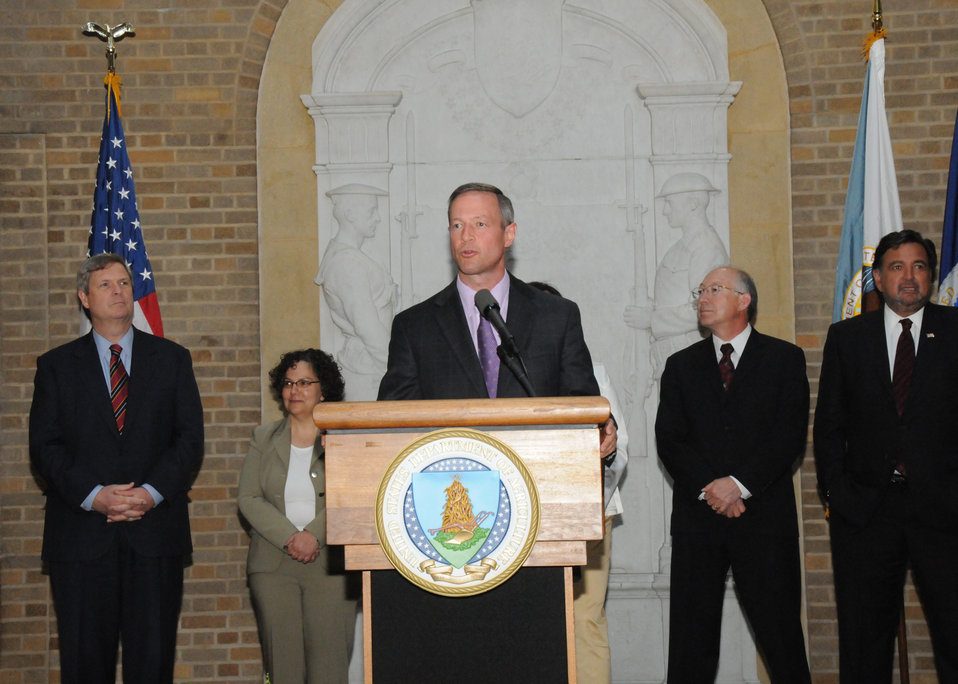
Maryland Governor Martin O’Malley makes remarks at the White House Conference on America’s Great Outdoors reception held at the Department of Agriculture on Thursday, April 15, 2010. (L to R in background Agriculture Secretary Tom Vilsack, Council on Environmental Quality Chair Nancy Sutley, Interior Secretary Ken Salazar, and New Mexico Governor Bill Richardson) USDA photo 10di1315-98